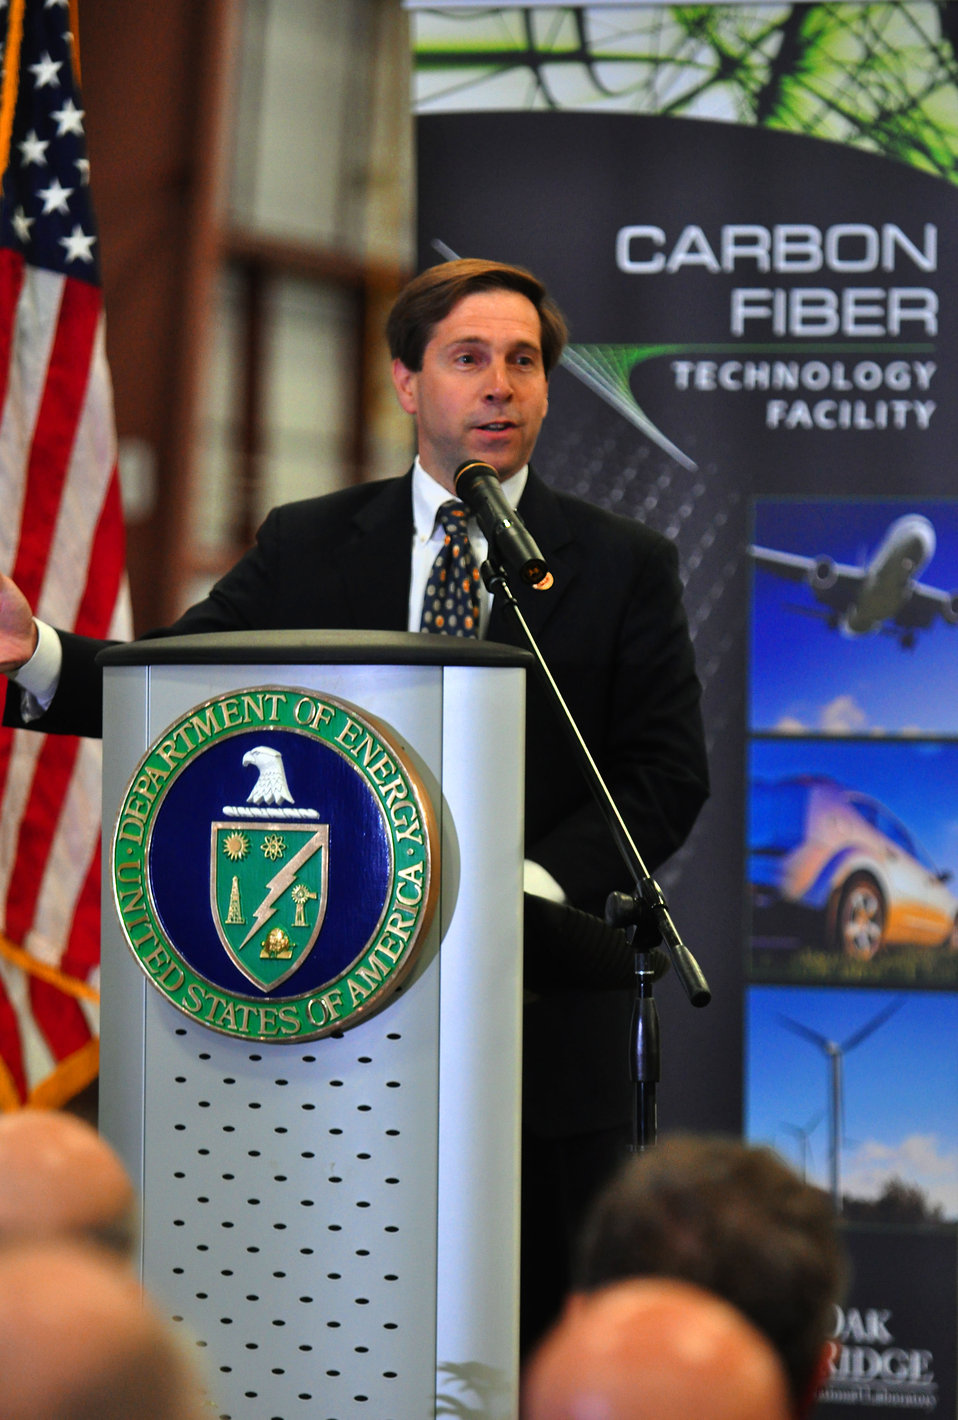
Carbon Fiber Technology Facilty Open House Oak Ridge Tennessee

13-025 DOE photo Lynn Freeny
Tennessee Congressman Chuck Fleischmann